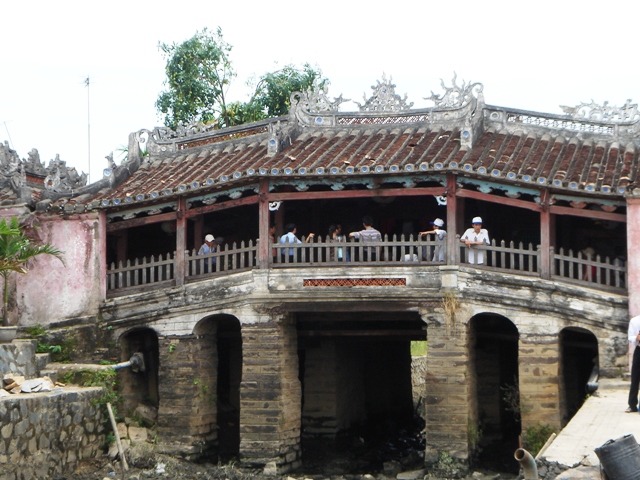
Japanese Covered Bridge, Hoi An, Vietnam. 日本語: 来遠橋 (日本橋)